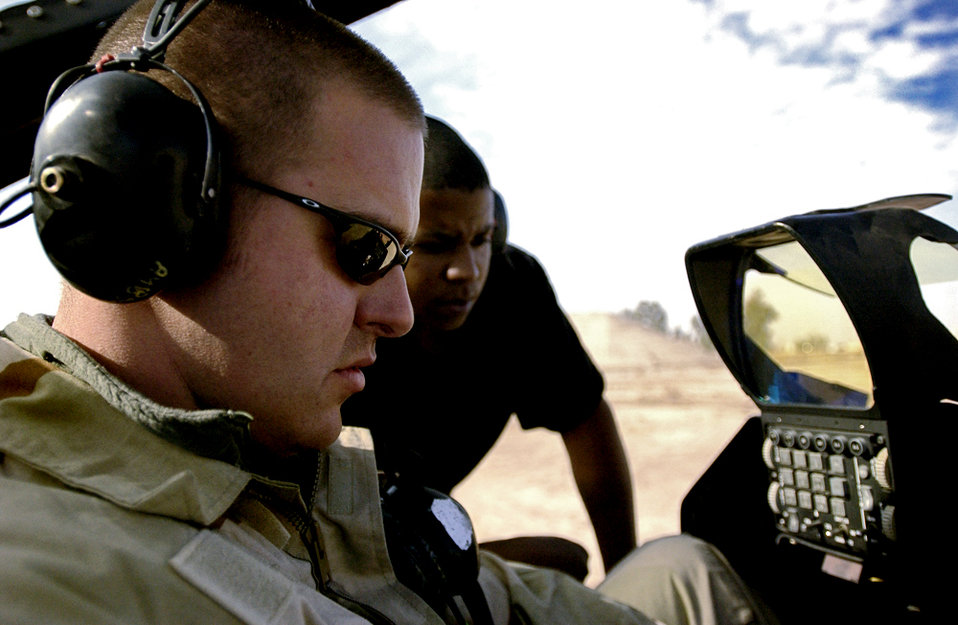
Falcon fixers

BALAD AIR BASE, Iraq (AFPN) -- Senior Airman Benjamin Buehler (left) and Airman 1st Class Jason Mckee, both from the 332nd Expeditionary Aircraft Maintenance Squadron, troubleshoot the fuel system electronics on an F-16 fighter.